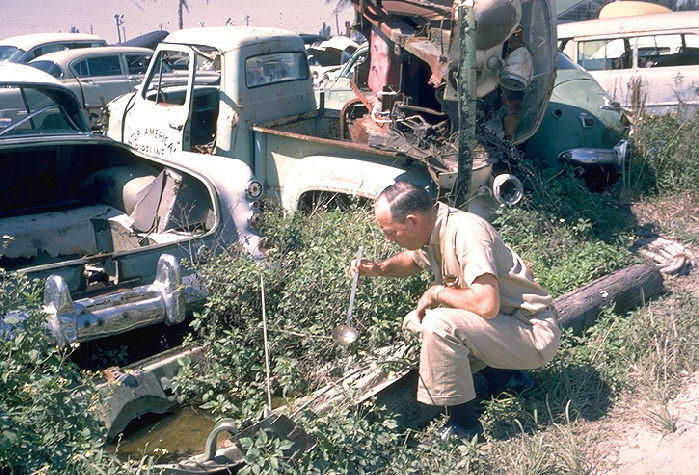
Car junk yard, potential mosquito breeding site.